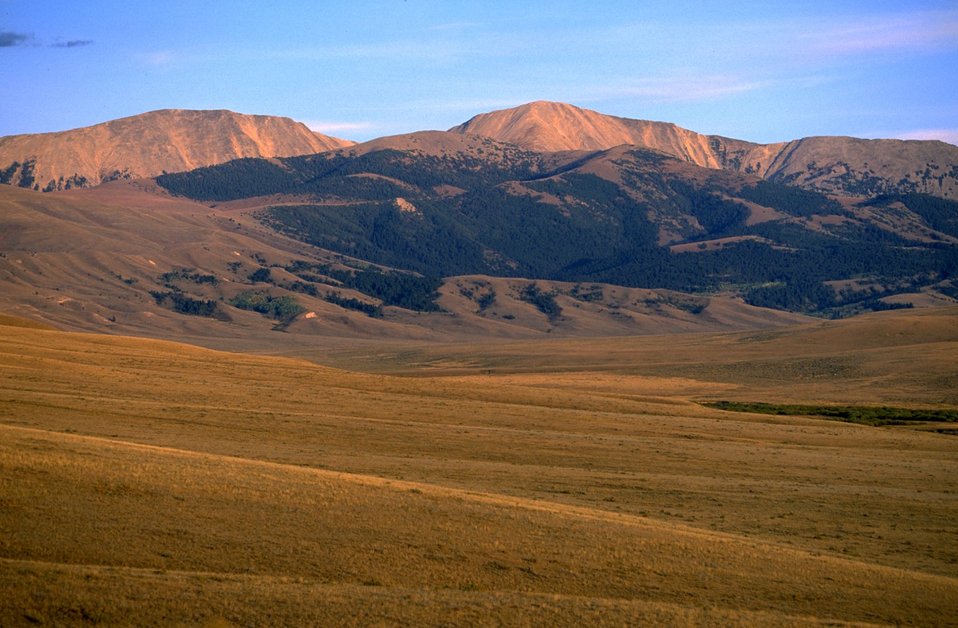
Valley with mountains in the background